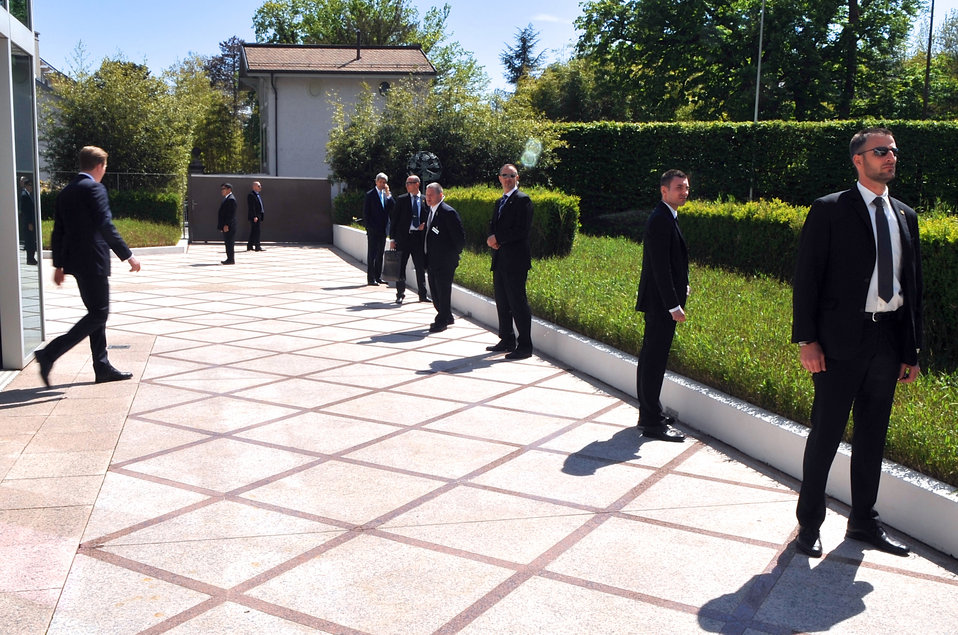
Swiss Police Stand Guard as Secretary Kerry Makes Phone Call Amid Ukraine Talks in Geneva

Members of a Swiss protective detail form a line near U.S. Secretary of State John Kerry as he makes a phone call during a break in meetings in Geneva, Switzerland, on April 17, 2014, with Russian, Ukrainian, and European Union officials about Ukraine.